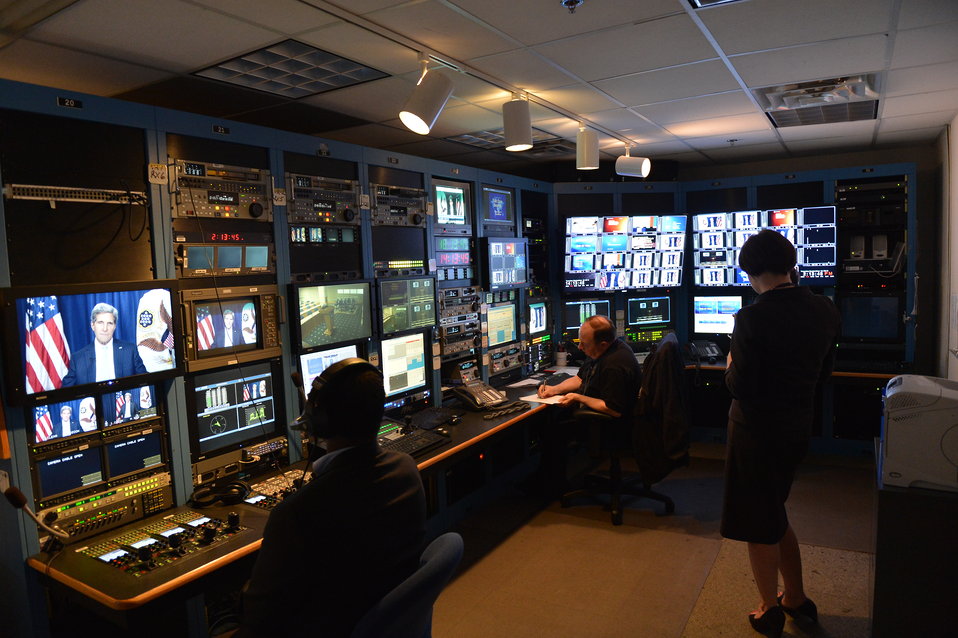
Behind the Scenes: Secretary Kerry's Google Hangout on Syria

Behind the scenes at U.S. Secretary of State John Kerry's Google Hangout with the New York Time's Nicholas Kristof and Syria Deeply's Lara Setrakian at the U.S. Department of State in Washington, DC on September 10, 2013.